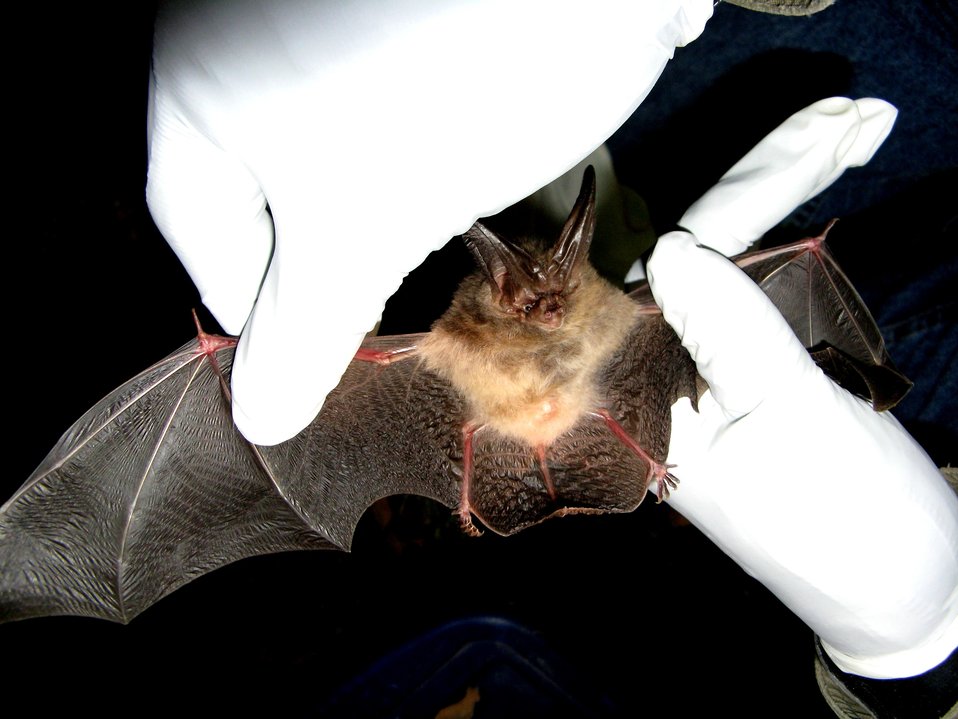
Virginia big-eared bat at Repass Saltpetre Cave.